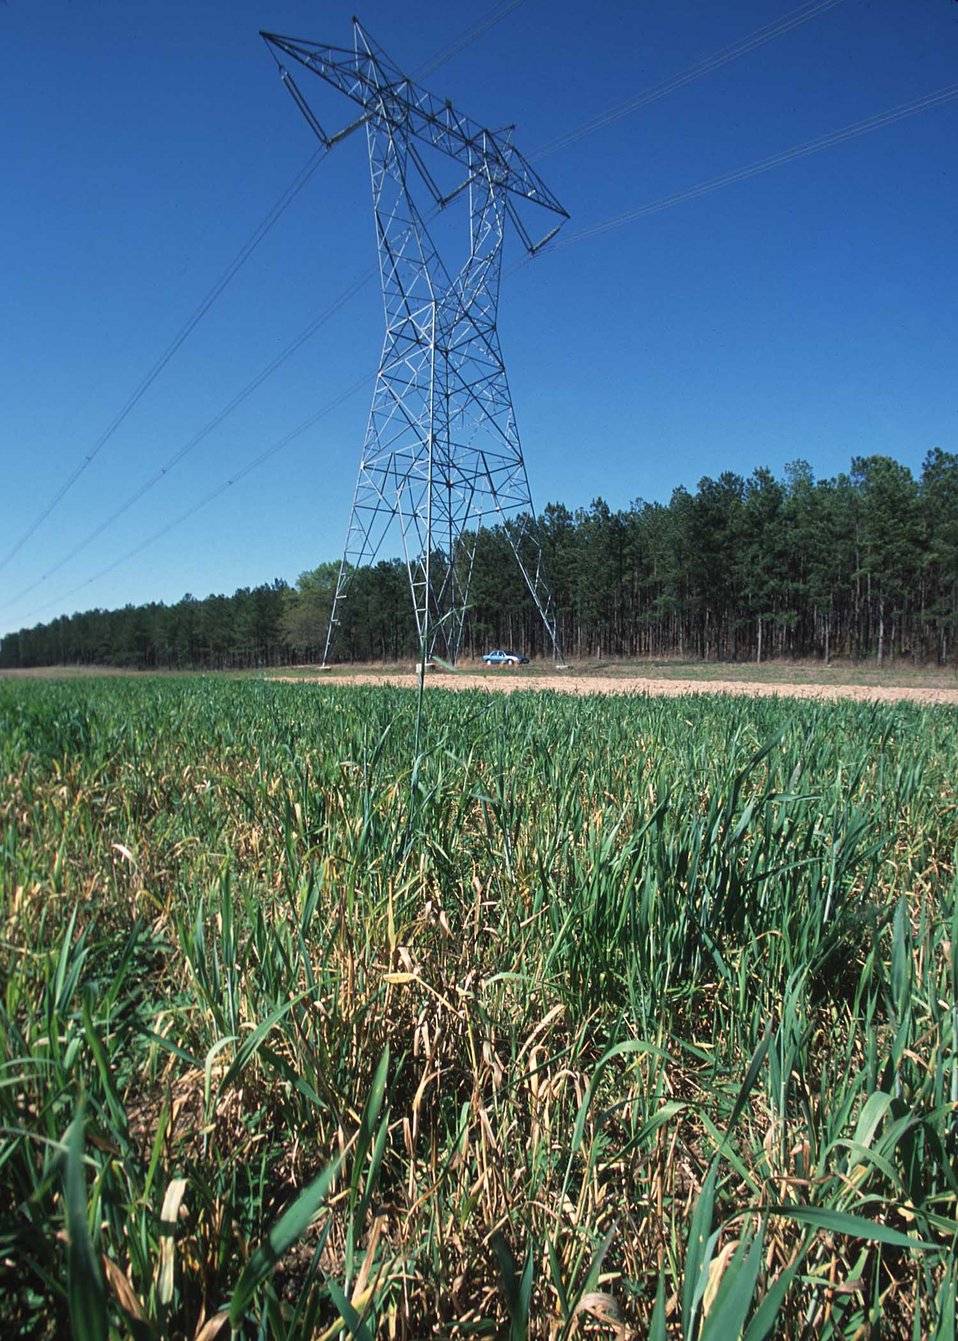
Project Wings foodplots of wheat under Georgia Power Company transmission lines. Project implemented with the assistance of NRCS, RC&D, and Georgia Power.